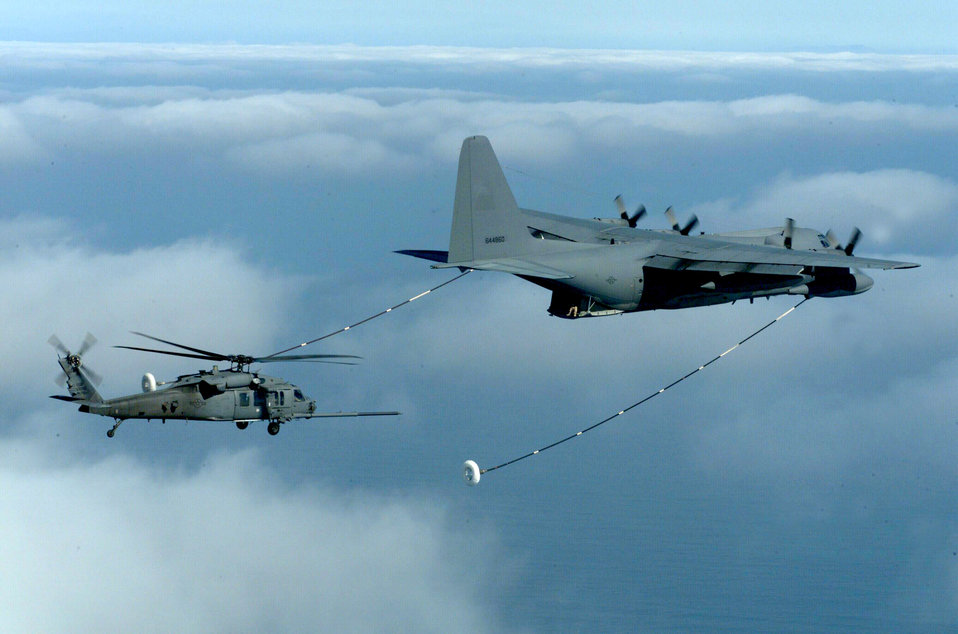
Got gas?

OVER SAN DIEGO, Calif. - An HH-60 from the 55th Rescue Squadron's moves in to refuel from the 79th Rescue Squadron's C-130 here. This is part of a water rescue training exercise conducted jointly between the 55th, 79th, and 48th Rescue Squadrons, all a part of the Air Force Search and Rescue Operations Mission at Davis-Monthan Air Force Base, Ariz.